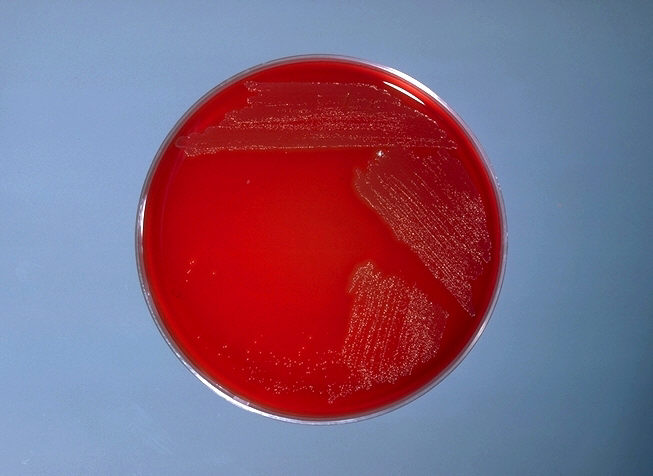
Blood agar plate culture of Corynebacterium haemolyticum.